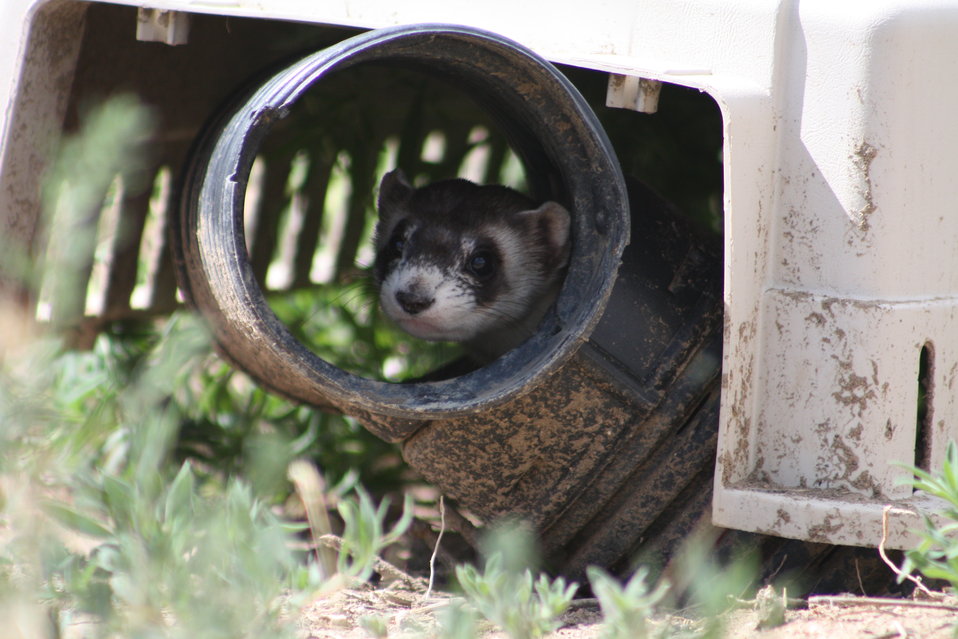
Interns visit the NBFFCC

In the summer of 2012, USFWS Region 6 interns visited the National Black-footed Ferret Conservation Center (NBFFCC) in Colorado to learn how the program reintroduces the endangered Black-footed ferret back into its native habitat.